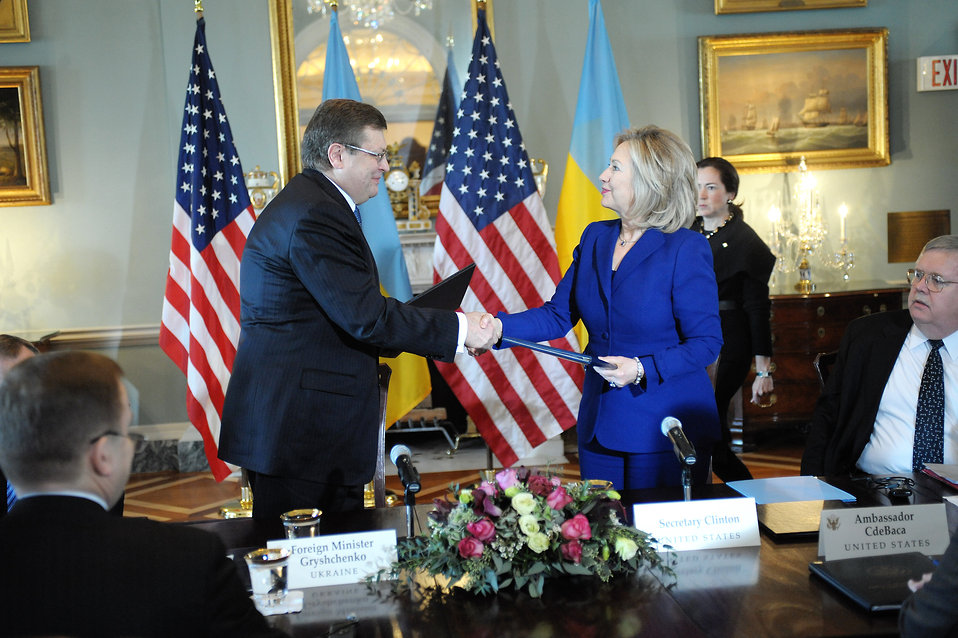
Secretary Clinton and Ukrainian Foreign Minister Gryshchenko Shake Hands

U.S. Secretary of State Hillary Rodham Clinton and Ukrainian Foreign Minister Gryshchenko shakes hands after signing a strategic partnership memorandum of understanding on trafficking in persons at the U.S. Department of State in Washington, D.C., on February 15, 2011.